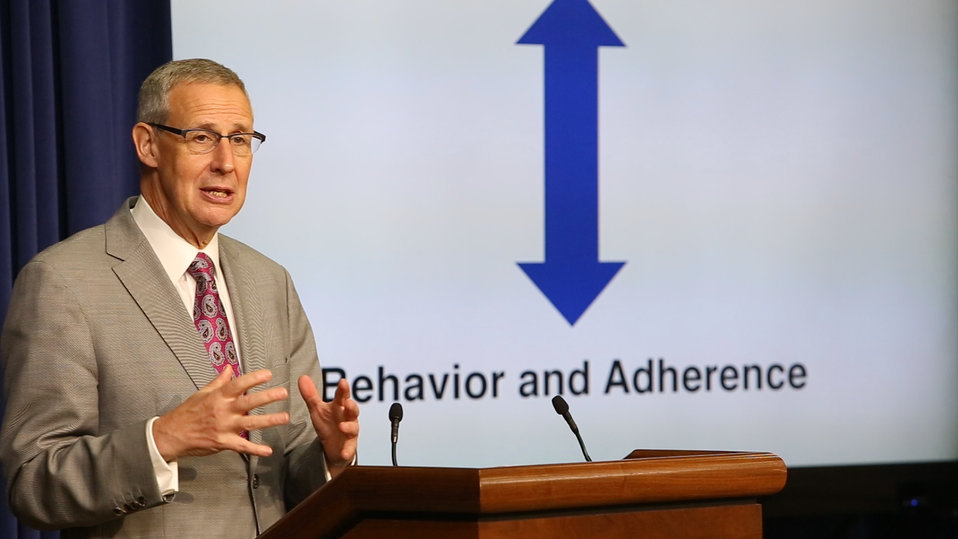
MVI 0180.MOV.Still005